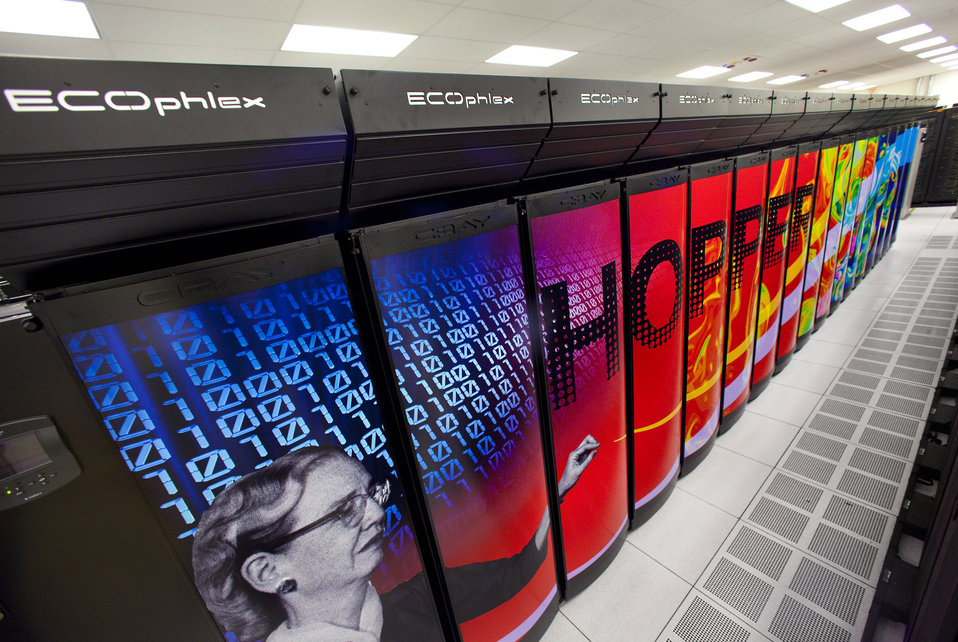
NATIONAL ENERGY RESEARCH SCIENTIFIC COMPUTING (NERSC) HOPPER SUPERCOMPUTER CLUSTER AT THE OAKLAND SCIENTIFIC FACILITY (OSF).

Shown are the Cray ECOphlex water-cooled supercomputers.